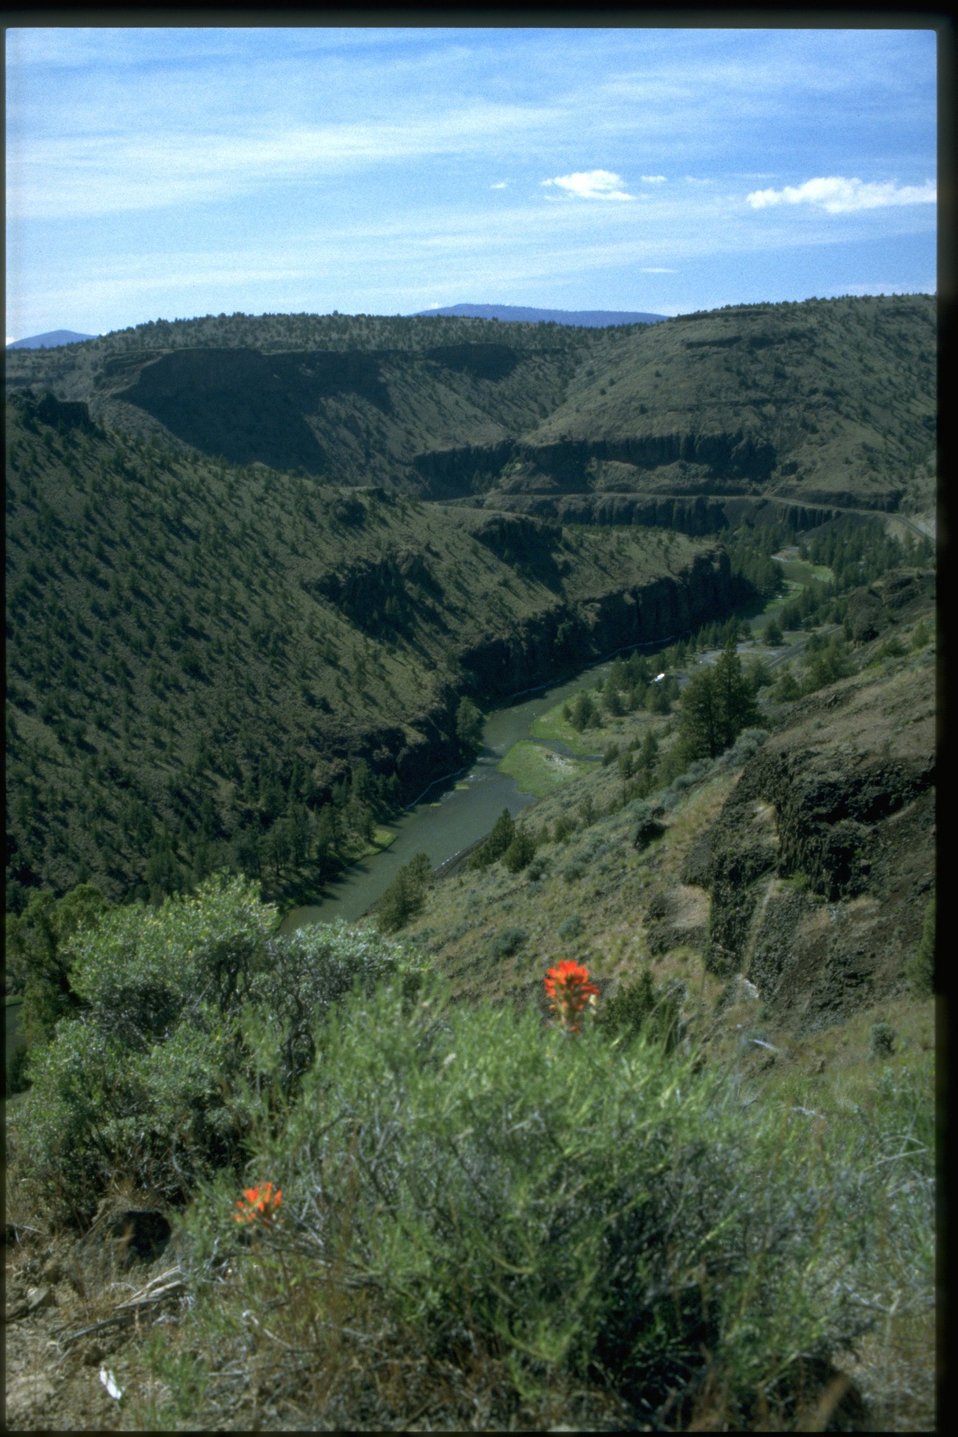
Lower Crooked Wild and Scenic River from Chimney Rock Trail.